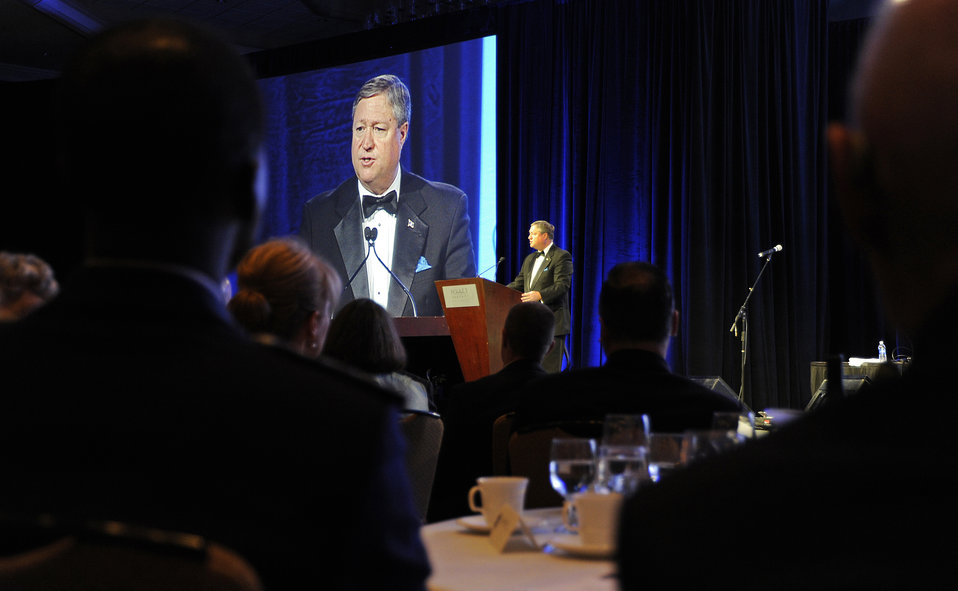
SecAF addresses AFSA

Secretary of the Air Force Michael Donley speaks during the 2012 Air Force Sergeants Association Professional Airmen's Conference honors banquet Aug. 15, 2012, in Jacksonville, Fla. During his speech, Donley emphasized the need to develop quality Airmen who adhere to standards and uphold the Air Force core values of integrity, service and excellence.